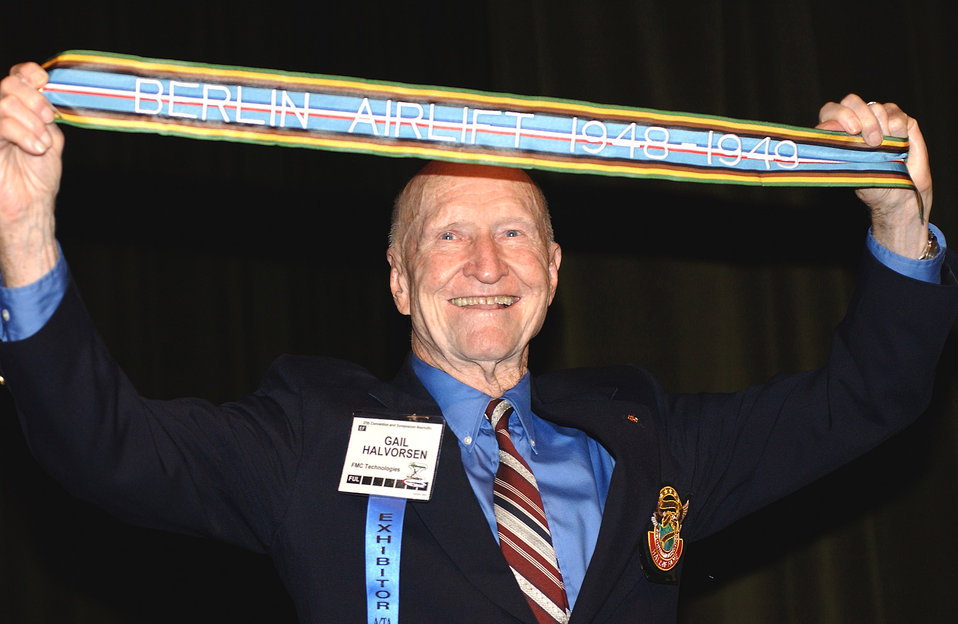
Air Force authorizes Berlin Airlift streamers

NASHVILLE, Tenn. -- Retired Col. Gail Halvorsen displays the newly authorized Berlin Airlift streamer presented to him Oct. 29 here at the Airlift Tanker Association convention. Units that participated in the 1948-1949 humanitarian airlift can include the streamer on their units' guidons. Colonel Halvorsen is known as the